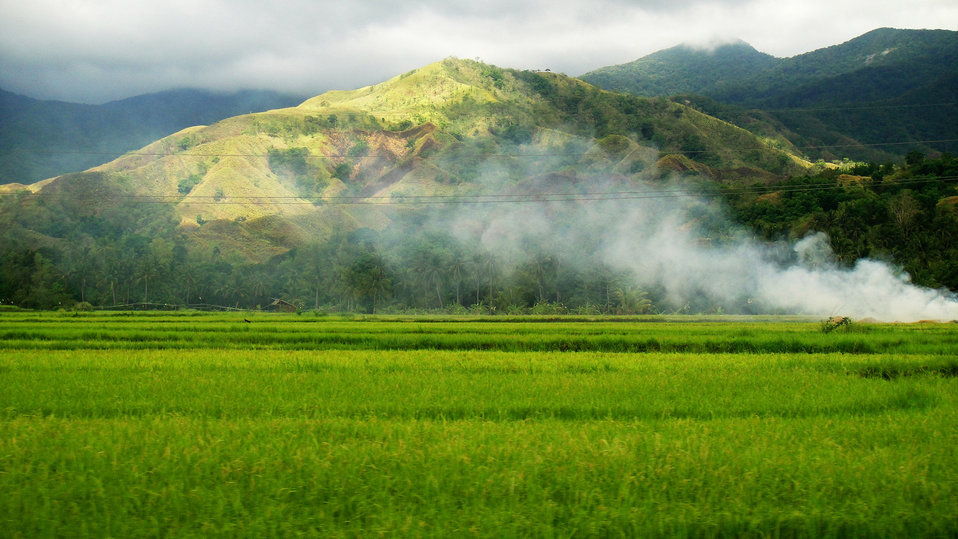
Green living 2

Green plants and mountain.